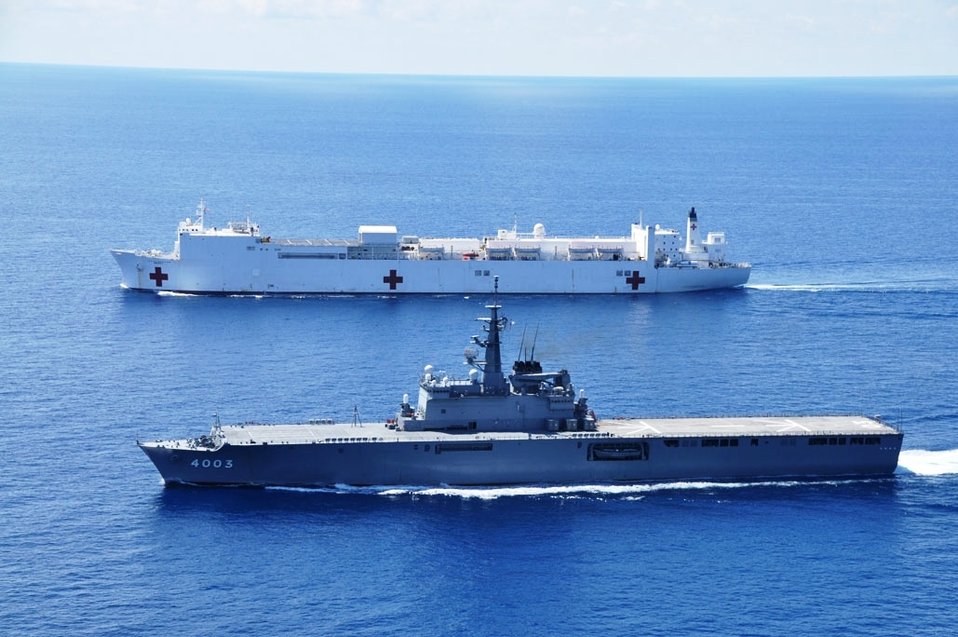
JDS Kunisaki and USNS MERCY Sail

The JDS Kunisaki, front, and the USNS MERCY, back, sail on the Pacific Ocean off the coast of Southeast Asia on June 14, 2010.